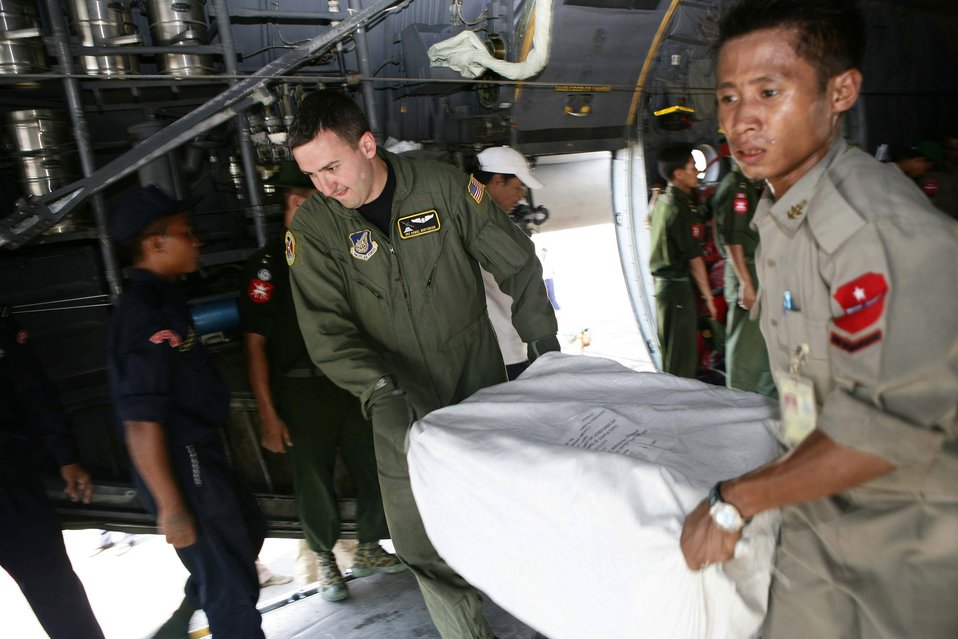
Airmen support Burma relief effort

Burmese and U.S. servicemembers work together to unload supplies from a U.S. Air Force C-130 Hercules May 12 at Rangoon International Airport in Burma. The shipment of water, mosquito nets and blankets arrived on the first of three planned relief flights to provide aid to citizens devastated by Tropical Cyclone Nagris.